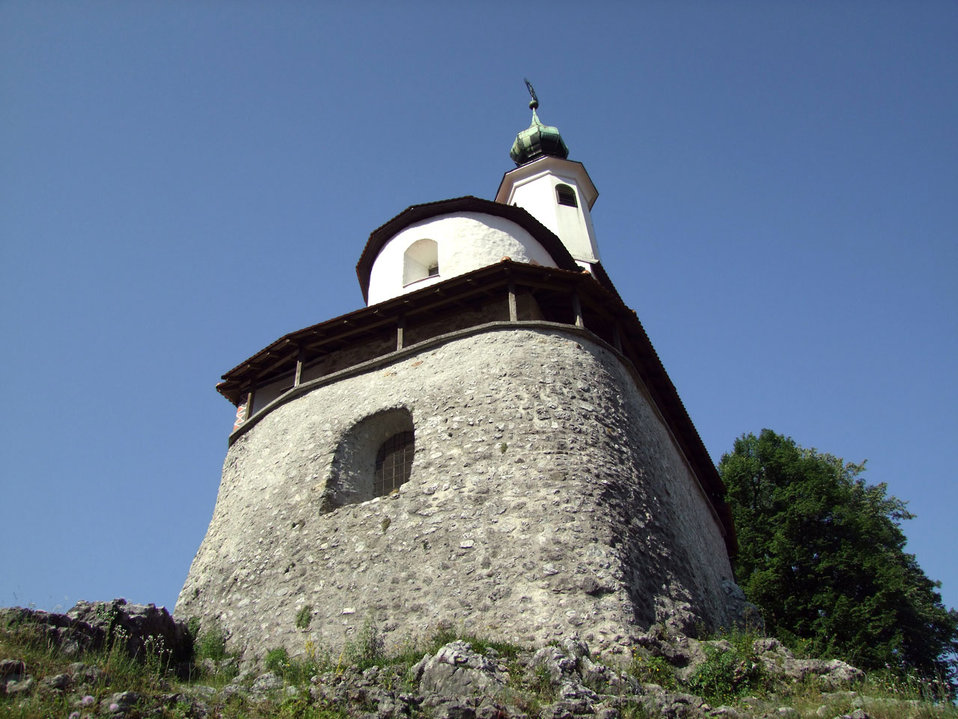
Mali grad church

On the hill of medieval city of kamnik in slovenia there is beautifull small church with over 35 legends of beautiful veronica.